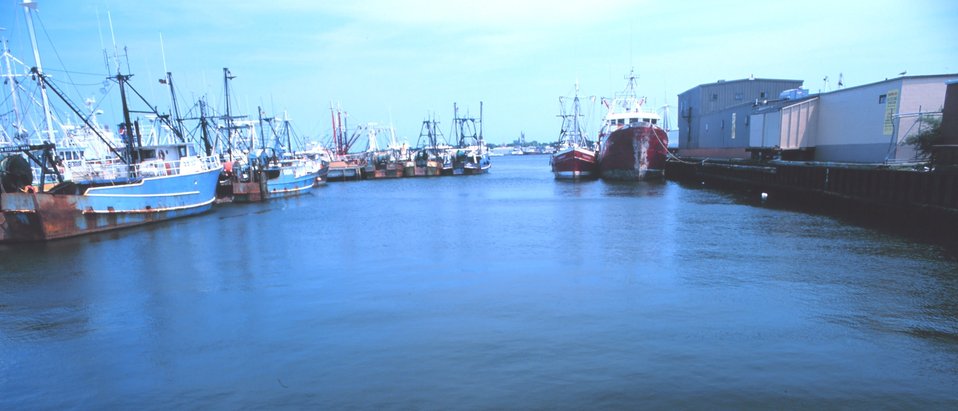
New Bedford fishing boats.